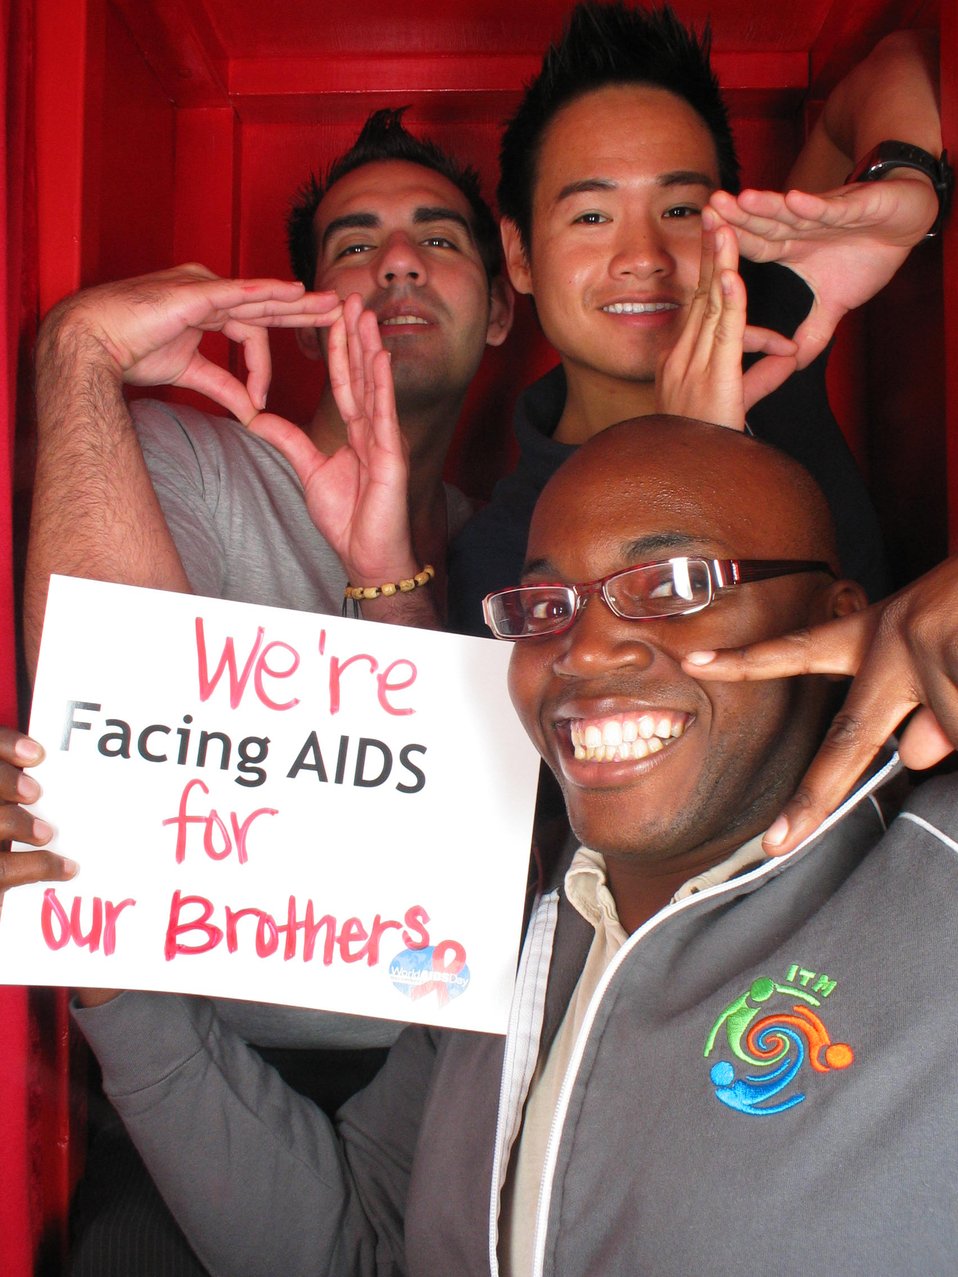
We're Facing AIDS for our brothers.